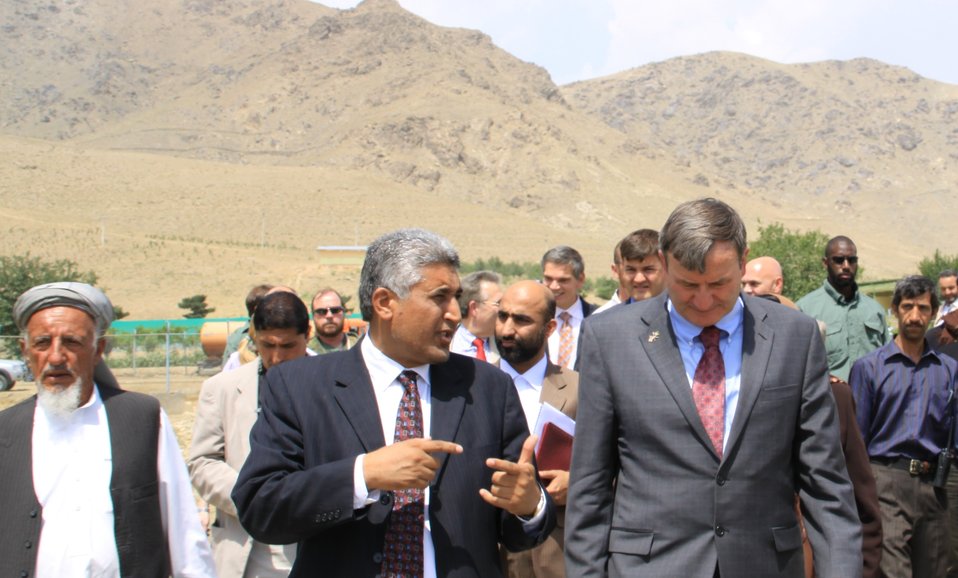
Badam Bagh Farm